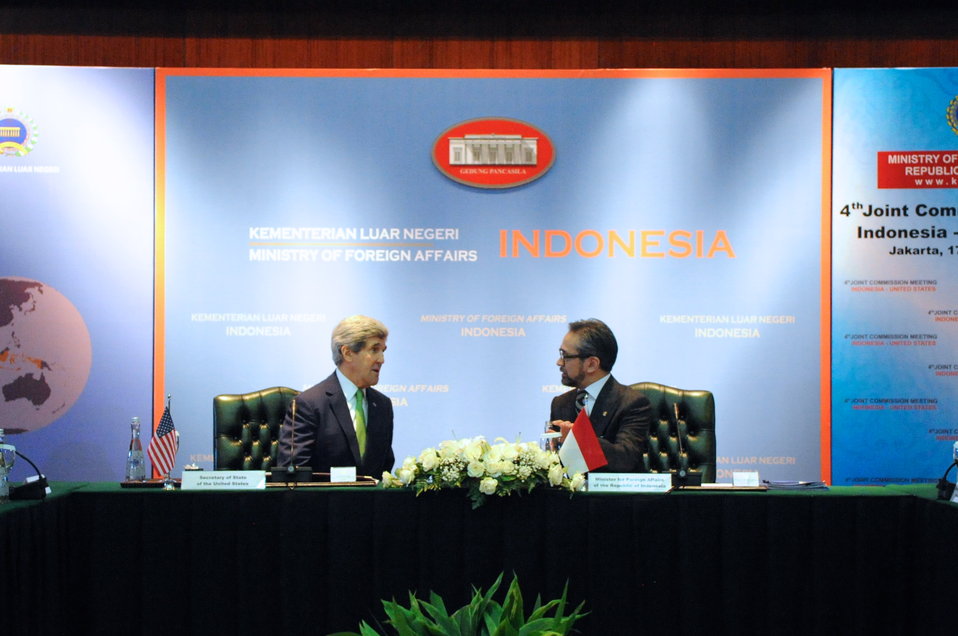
Secretary Kerry Speaks With Indonesia Foreign Minister Natalegawa Before Joint Commission Meeting in Jakarta

U.S. Secretary of State John Kerry and Indonesia Foreign Minister Marty Natalegawa speak to one another before convening a U.S.-Indonesia Joint Commission Meeting at the Ministry of Foreign Affairs in Jakarta, Indonesia on February 17, 2014.